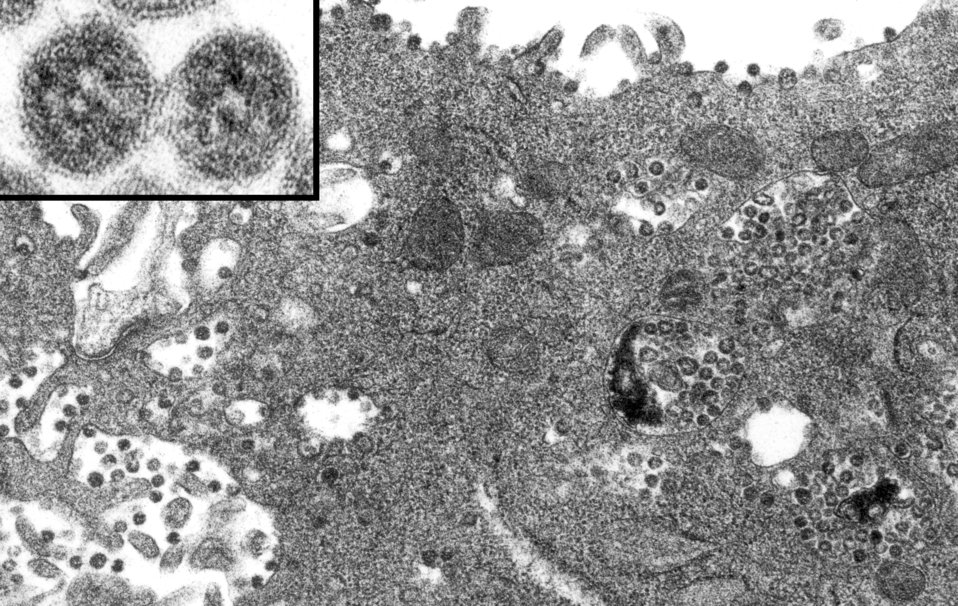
Note the coronaviruses contained within cytoplasmic membrane-bound vacuoles, and cisternae of the rough endoplasmic reticulum.